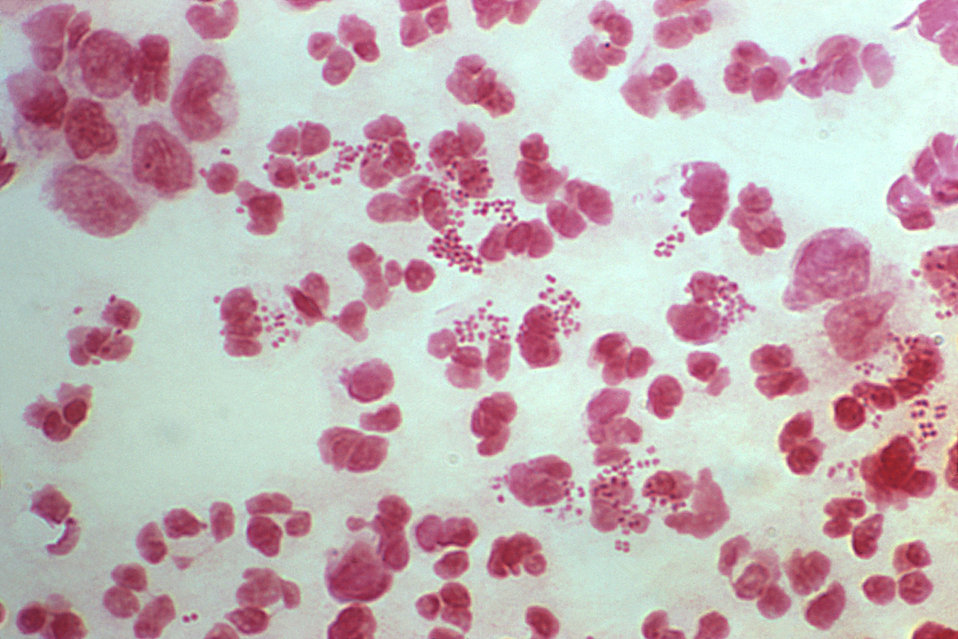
This is a photomicrograph of a Gram-stained urethral exudate sample from a male who presented with a case of urethritis. In this particular view, what turned out to be numerous extracellular Gram-negative Neisseria gonorrhoeae diplococci bacteria were evident.